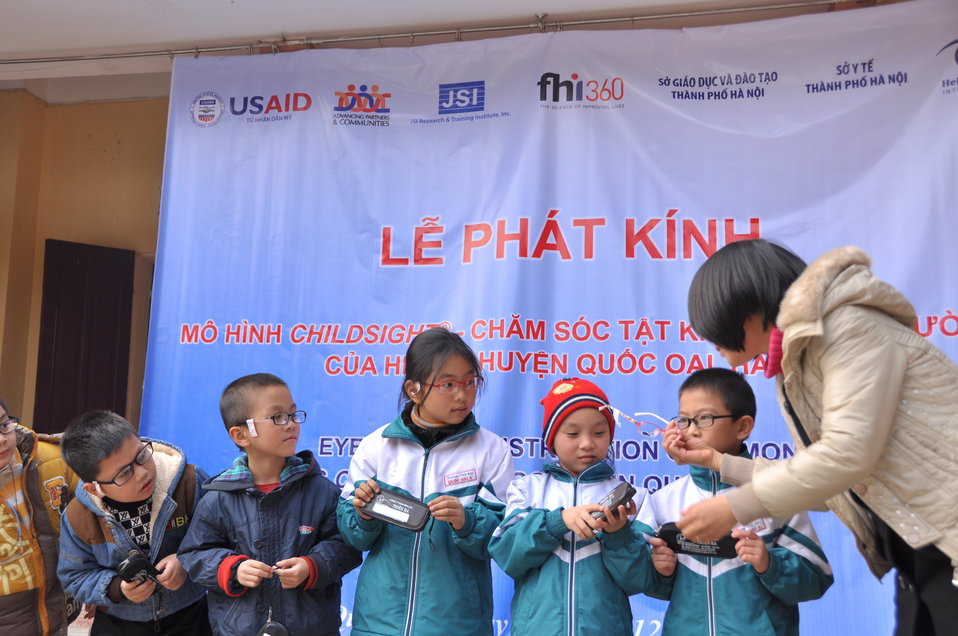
USAID supports distribution of eyeglasses to pupils and teachers in Quoc Oai, Hanoi.

Kieu Phu Junior Secondary School, Quoc Hoai, Hanoi, December 23, 2013.